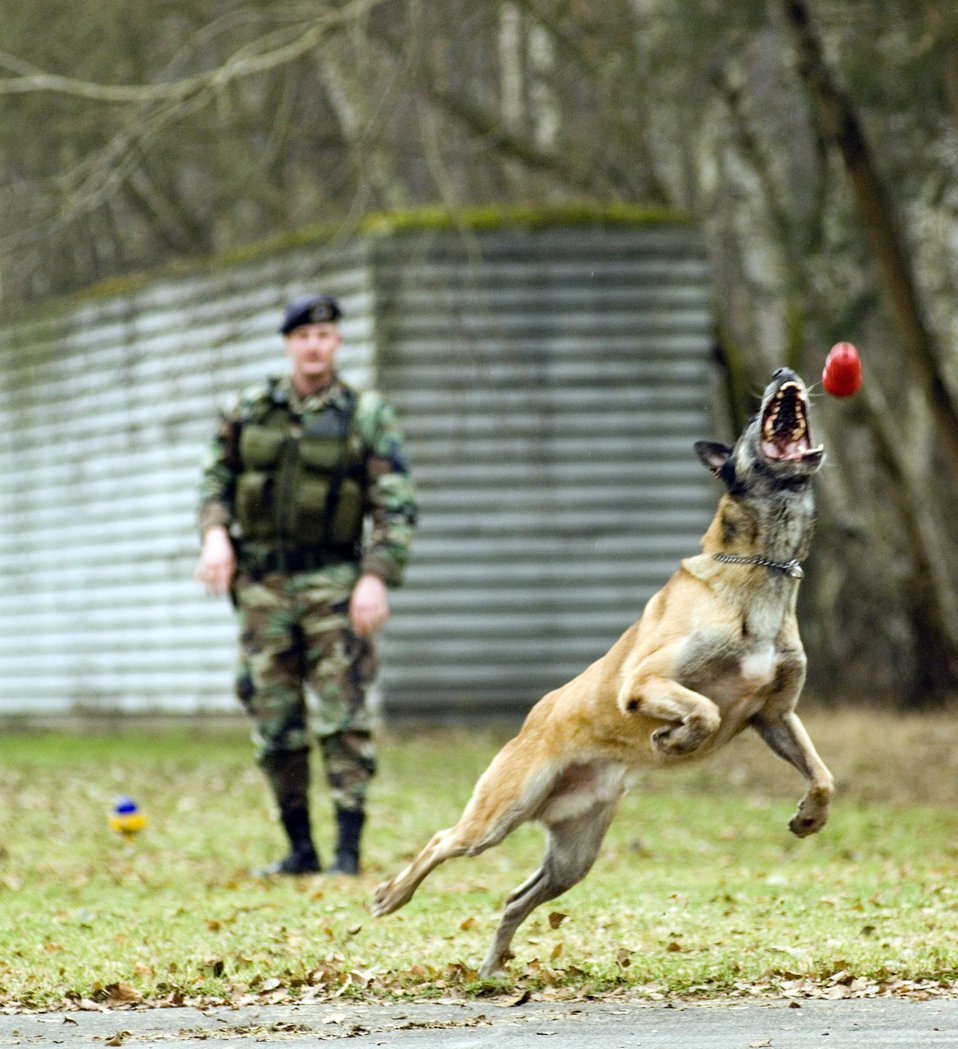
Four-legged partner

RAMSTEIN AIR BASE, Germany (AFPN) -- Tech. Sgt. John Vanderdrink has Basco chase down a toy. The military working dog team has been together three years with the 435th Security Forces Squadron.